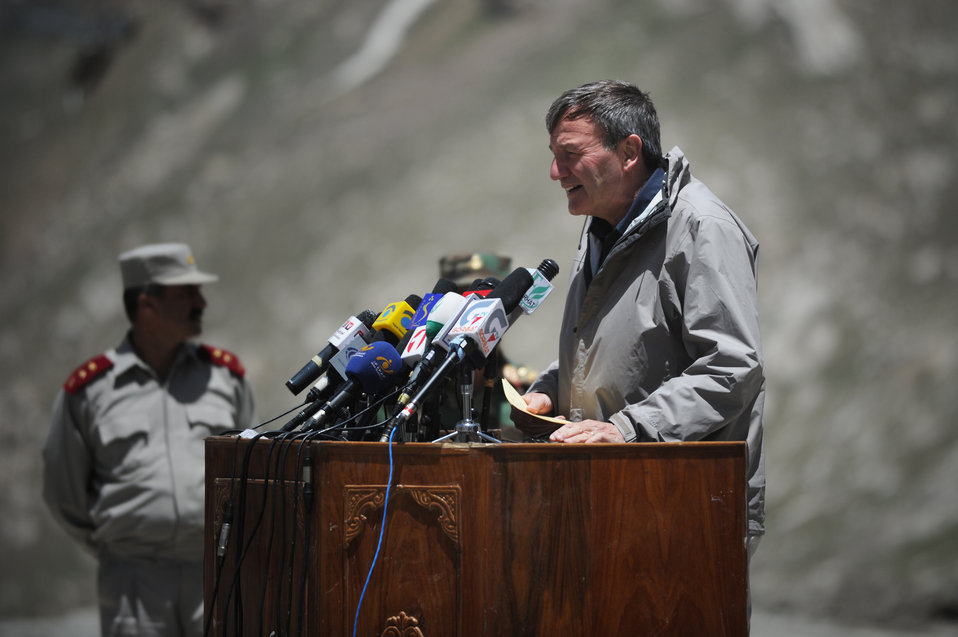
U.S. Ambassador Karl W. Eikenberry makes remarks during a ceremony to mark the beginning of renovations at the Salang Tunnel on the border of Parwan and Baghlan Provinces, Afghanistan, on Wednesday, June 15, 2011. (S.K.Vemmer/Department of State)